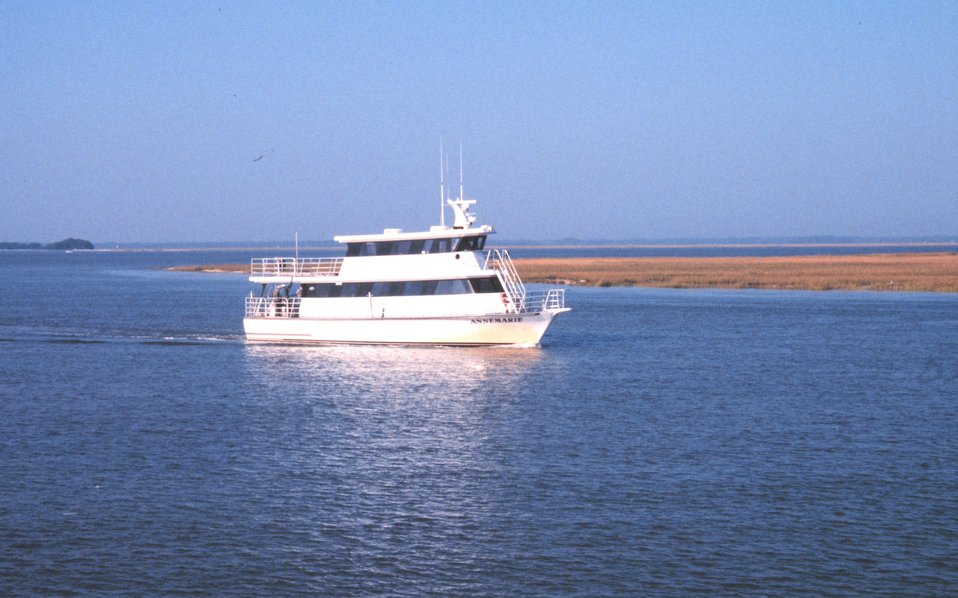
The ferry boat 'Anne Marie', named for the wife of tobacco magnate R. J. Reynolds. This vessel makes the 5-mile trip 3-4 times daily from the mainland to Marsh Landing Dock on Sapelo Island.